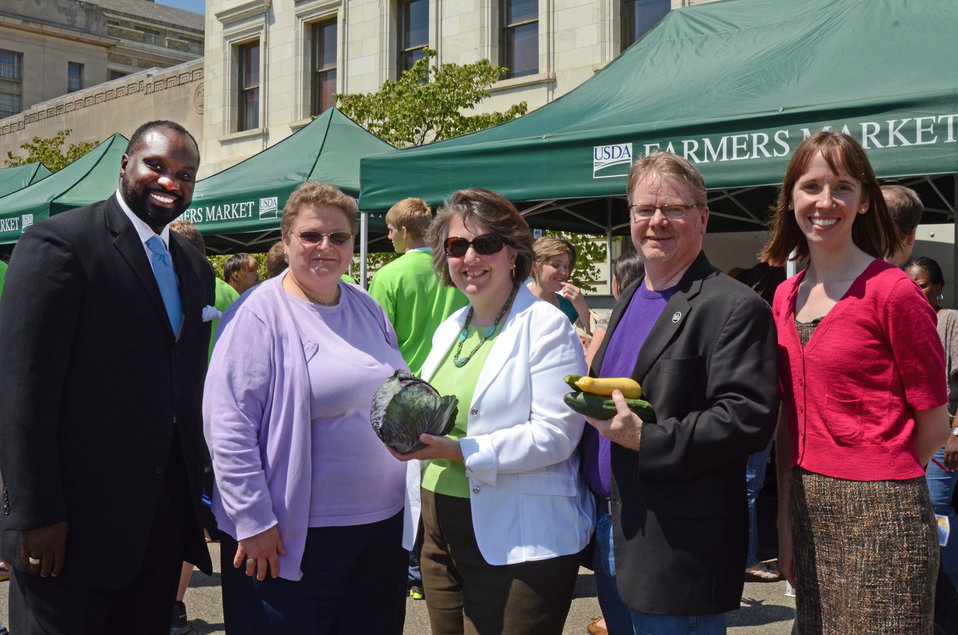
Agriculture Deputy Kathleen Merrigan joined representatives from the Office of Personnel Management (OPM), U.S. Department of Agriculture (USDA), DC Central Kitchen, and the Capital Area Food Bank at the Feds Feed Families and Farmers Market at USDA in Washington, D.C. on Friday, June 8, 2012.